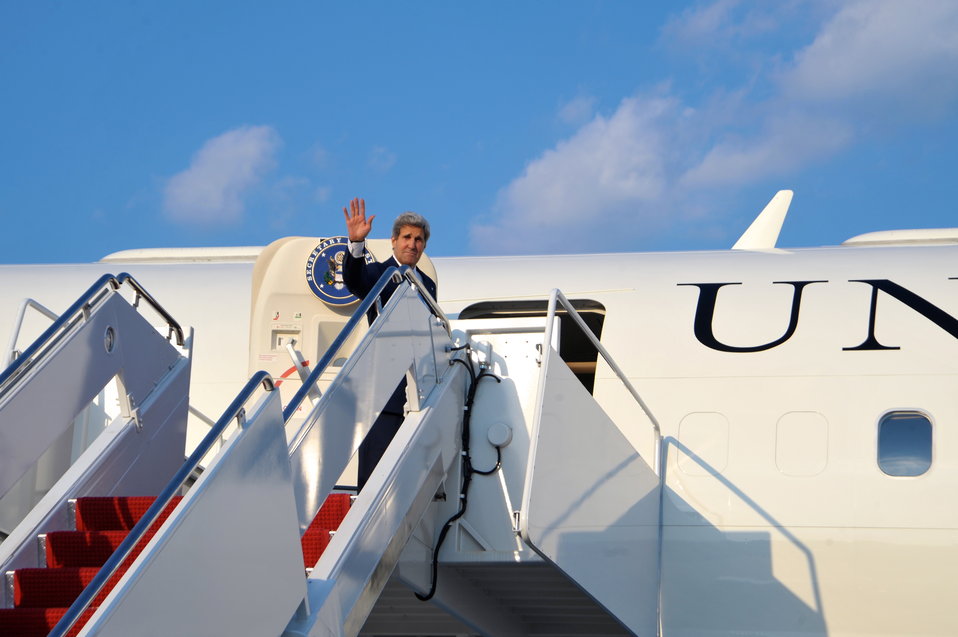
Secretary Kerry Departs for Amman, Jordan

U.S. Secretary of State John Kerry waves as he boards his plane at Andrews Air Force Base for a flight to Amman, Jordan, on July 15, 2013.